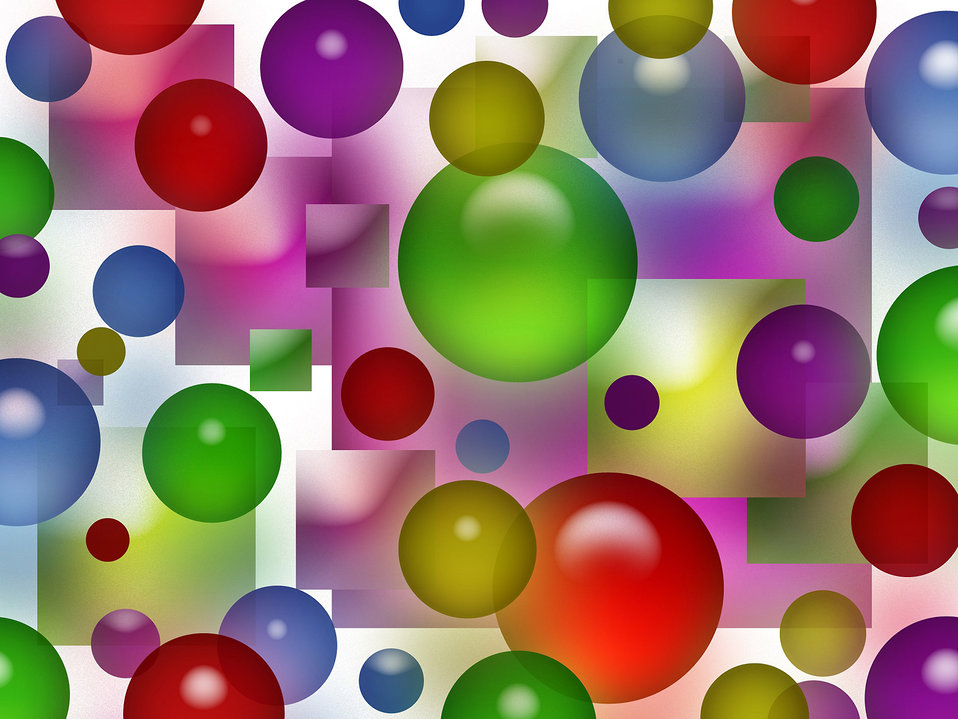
Colorful bubbles squares background

Colored bubbles squares background.